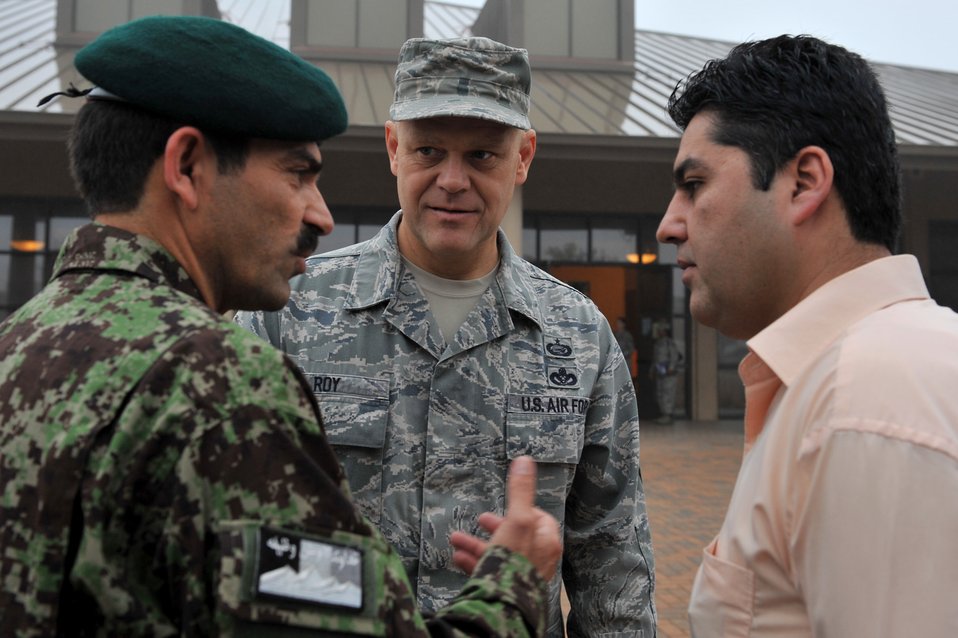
Chief Roy

Chief Master Sgt. of the Air Force James A. Roy speaks with Eid Mohammad, the command sergeant major of the Afghan air force, Oct. 27, 2010, at Lackland Air Force Base, Texas.